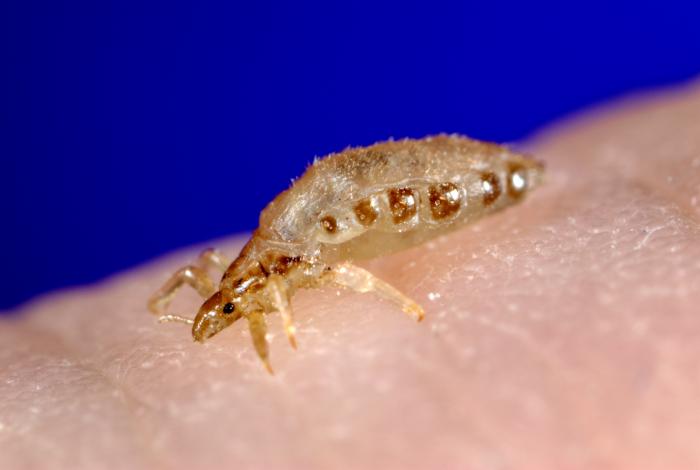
This 2006 photograph depicted a lateral view of a female body louse, Pediculus humanus var. corporis, as it was obtaining a blood-meal from a human host, who in this case, happened to be the photographer. Note its elongated abdominal region without any processes, and three pairs of legs, which are all equal in length and width, features displayed by Pediculus members.Body lice are parasitic insects that live on the body, and in the clothing or bedding of infested humans. Infestation is common, found worldwide, and affects people of all races. Body lice infestations spread rapidly under crowded conditions where hygiene is poor, and there is frequent contact among people. Note the sensorial setae, or hairs that cover the louse's body, which pick up, and transmit information to the insect about changes in its environment such as temperature, and chemical queues. The dark mass inside the abdomen is a previously ingested blood meal.